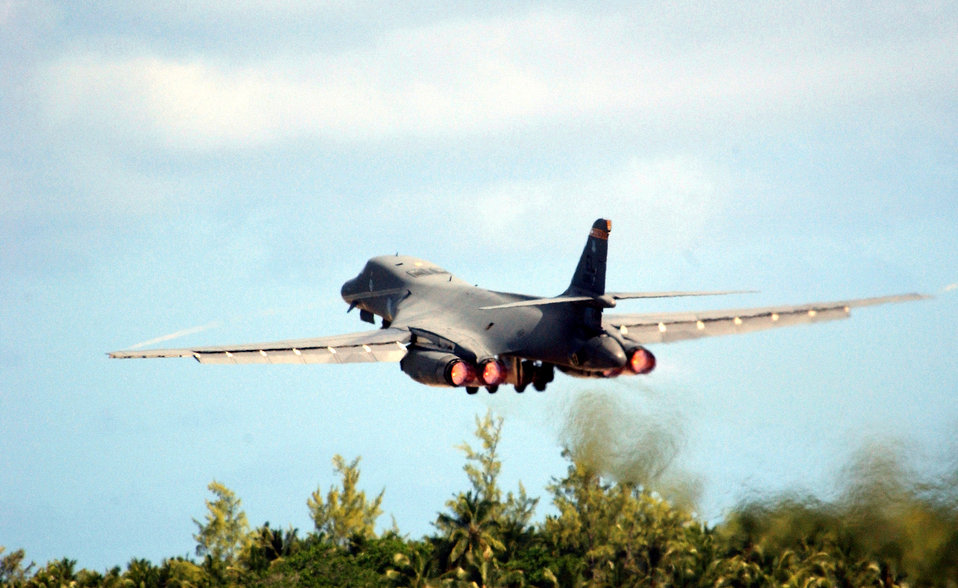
Freedom run

OPERATION ENDURING FREEDOM -- An Air Force B-1B Lancer bomber from the 28th Air Expeditionary Wing at Diego Garcia takes off for a combat mission Oct. 23 supporting Operation Enduring Freedom. Air Force B-2 Spirit, B-52 Stratofortress and B-1 aircraft have expended more than 80 percent of the tonnage dropped on combat missions over Afghanistan. The Air Force has flown more than 600 sorties including strike missions against al Qaeda and Taliban targets in Afghanistan. These targets include early warning radars, ground forces, command and control facilities, al Qaeda infrastructure, airfields and aircraft.